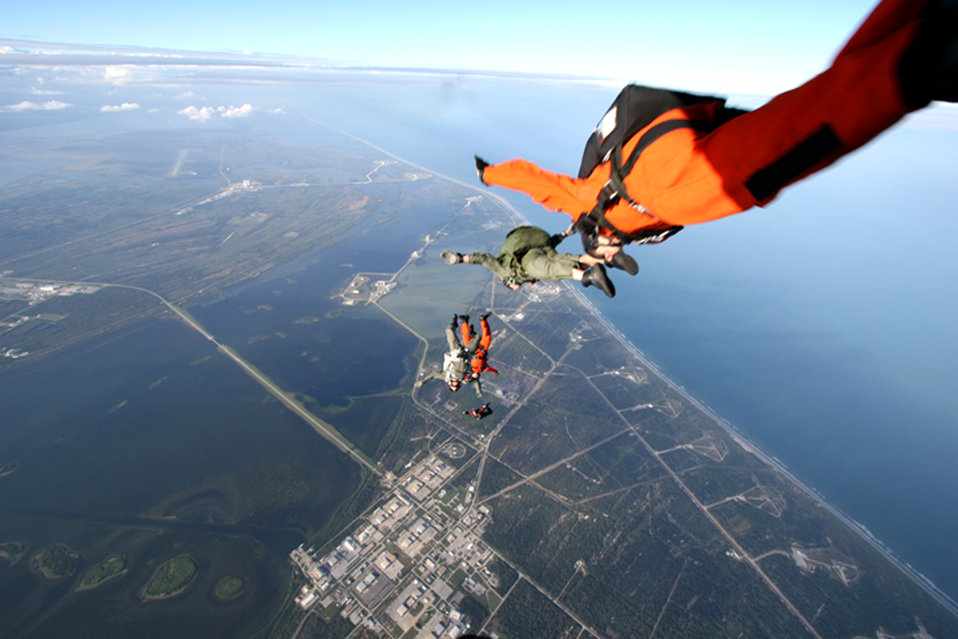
Joint jump

American and Canadian pararescue jumpers launch into the air as part of an international search and rescue exercise Jan. 5 over Cape Canaveral Air Station, Fla. Air Force Reserve Command PJs from the 920th Rescue Wing at Patrick Air Force Base, Fla., participated with Canadian rescue forces from the 435th Air Transport and Rescue Squadron based in Winnipeg, Manitoba.